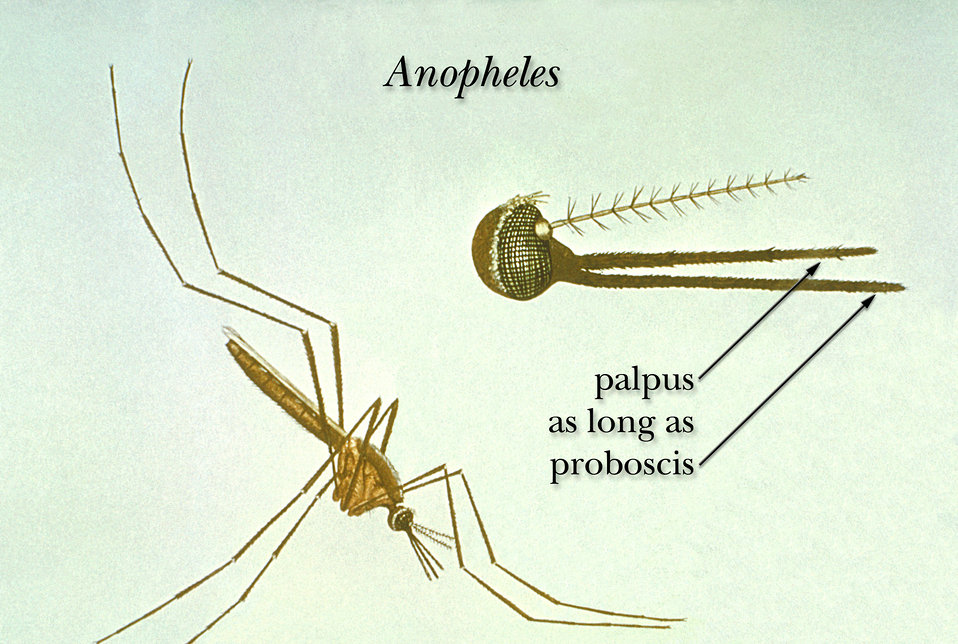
An illustration of an Anopheles mosquito.